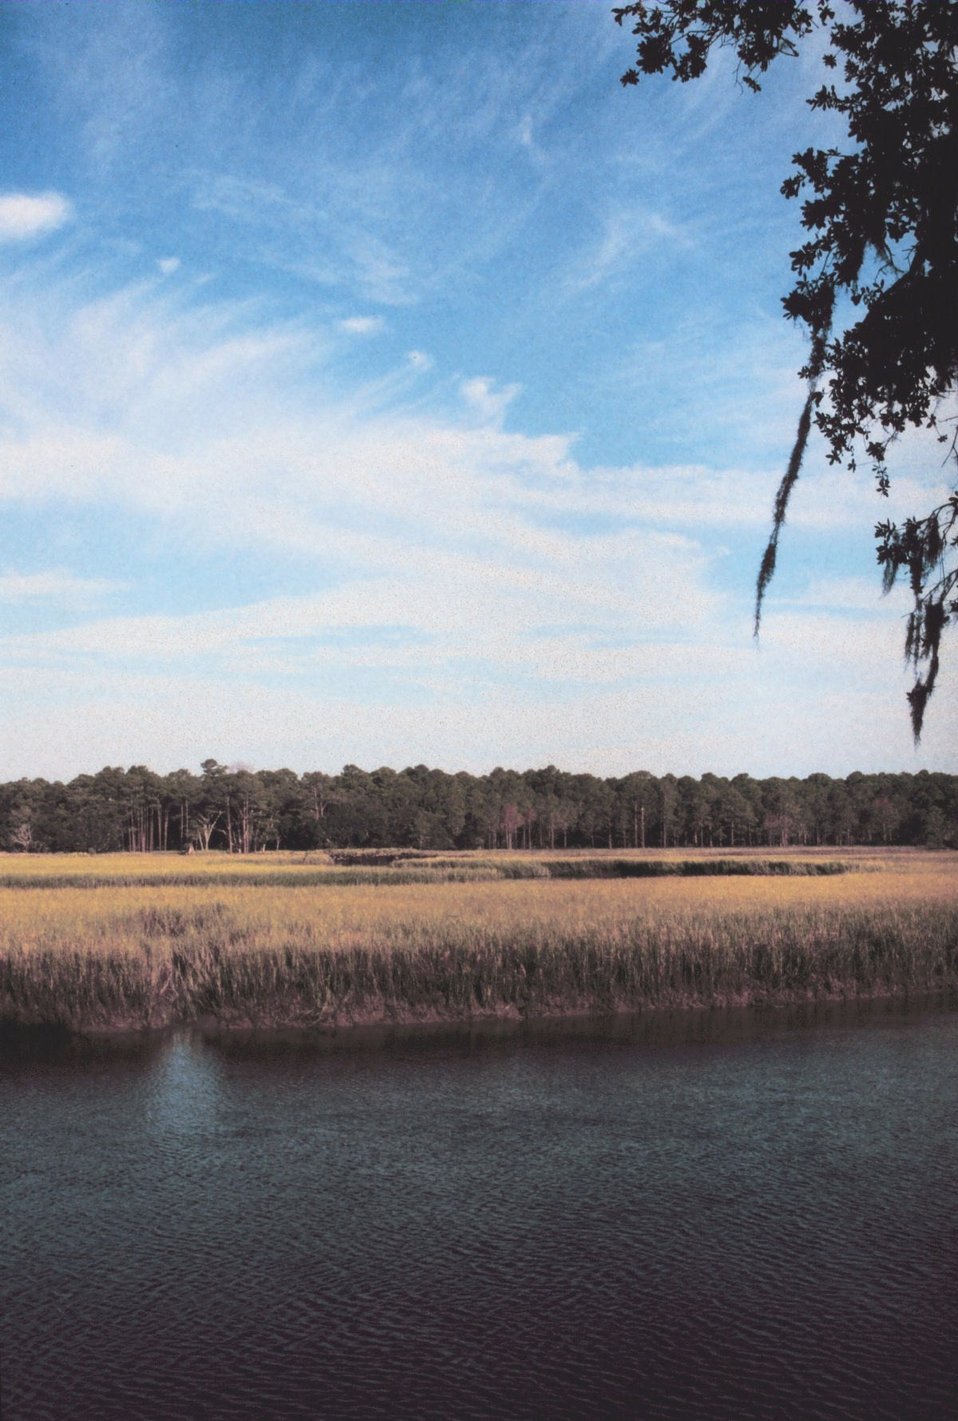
Looking west toward Sapelo from Cabretta Campground.